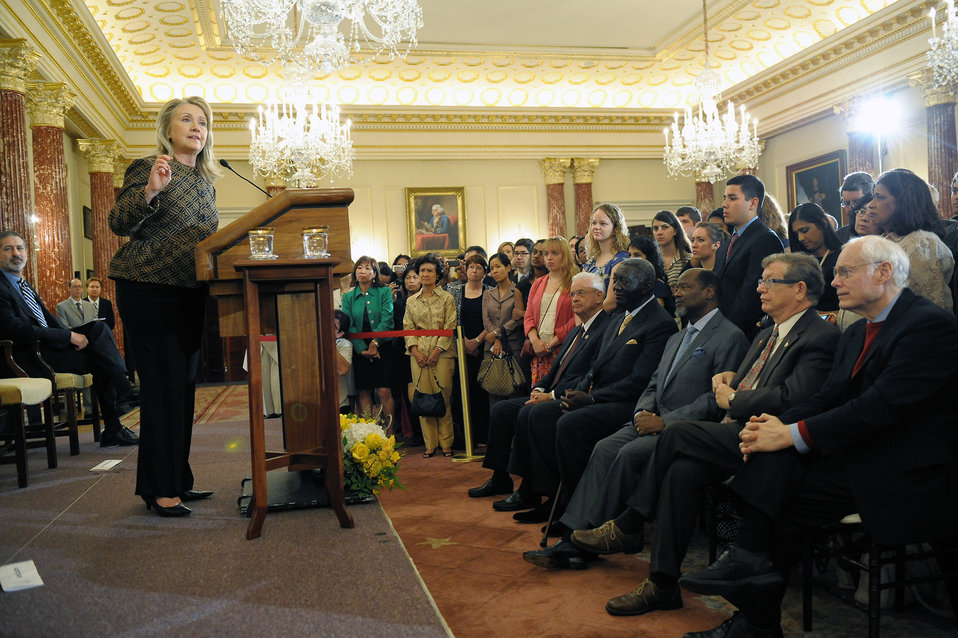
Secretary Clinton Delivers Remarks at the 2012 World Food Prize Laureate Announcement Ceremony

U.S. Secretary of State Hillary Rodham Clinton delivers remarks at the 2012 World Food Prize Laureate Announcement Ceremony at the Department of State in Washington, D.C. on June 12, 2012.